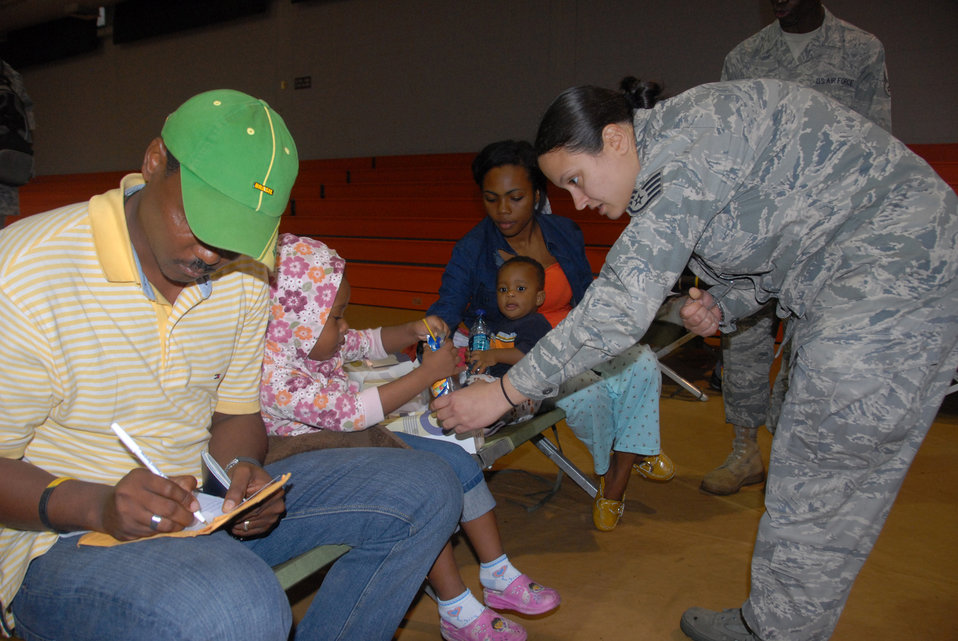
Haiti Relief

An Air Force Reservist from the 482nd Fighter Wing at Homestead Air Reserve Base, Fla., gives a drink to a young girl who arrived from Haiti Jan. 20, 2010. The girl and her family are being in-processed on base. Hundreds of evacuees have been in-processed so far and thousands more are expected.